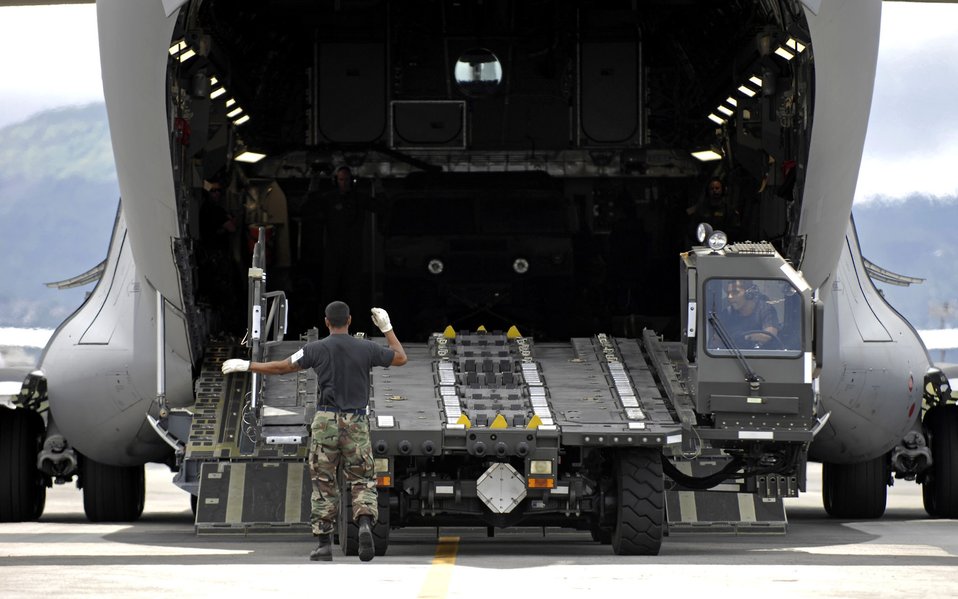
Hickam Rodeo team ready to go

Master Sgt. Greg Martinez guides a K-loader onto a C-17 Globemaster III during a practice session at Hickam Air Force Base, Hawaii, July 13. The team is practicing for the upcoming Air Mobility Command Rodeo at McChord AFB, Wash. Sergeant Martinez is from the 15th Logistics Readiness Squadron Combat Mobility Element and is part of Hickam's Rodeo team.